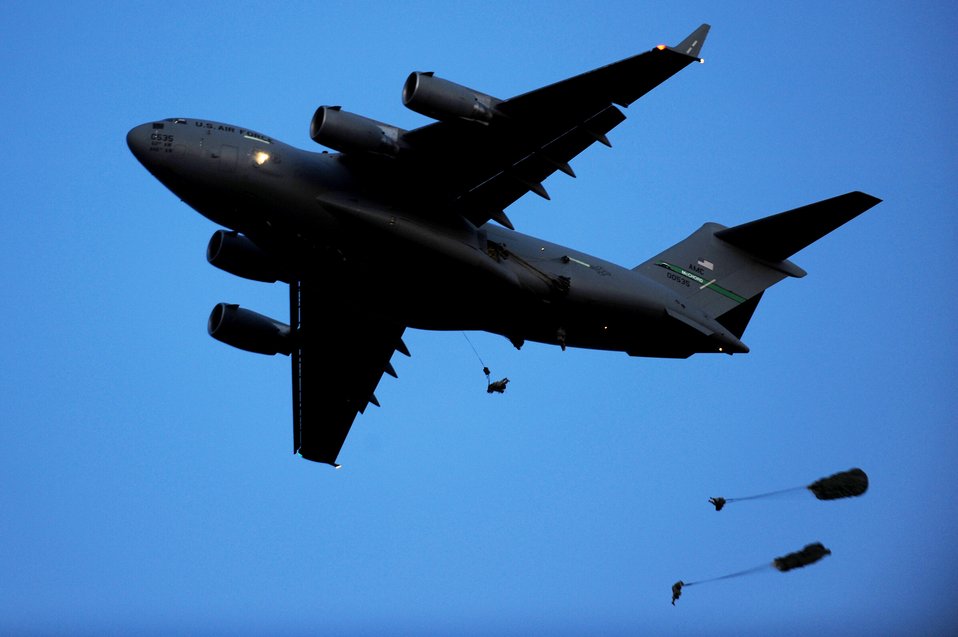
A jump in the dark

Paratroopers from the 82nd Airborne Division drop from a C-17 Globemaster III into a drop zone April 28, 2010, during a joint exercise at Fort Bragg, N.C. Many times, these exercises are the last opportunity for units to prepare before assuming